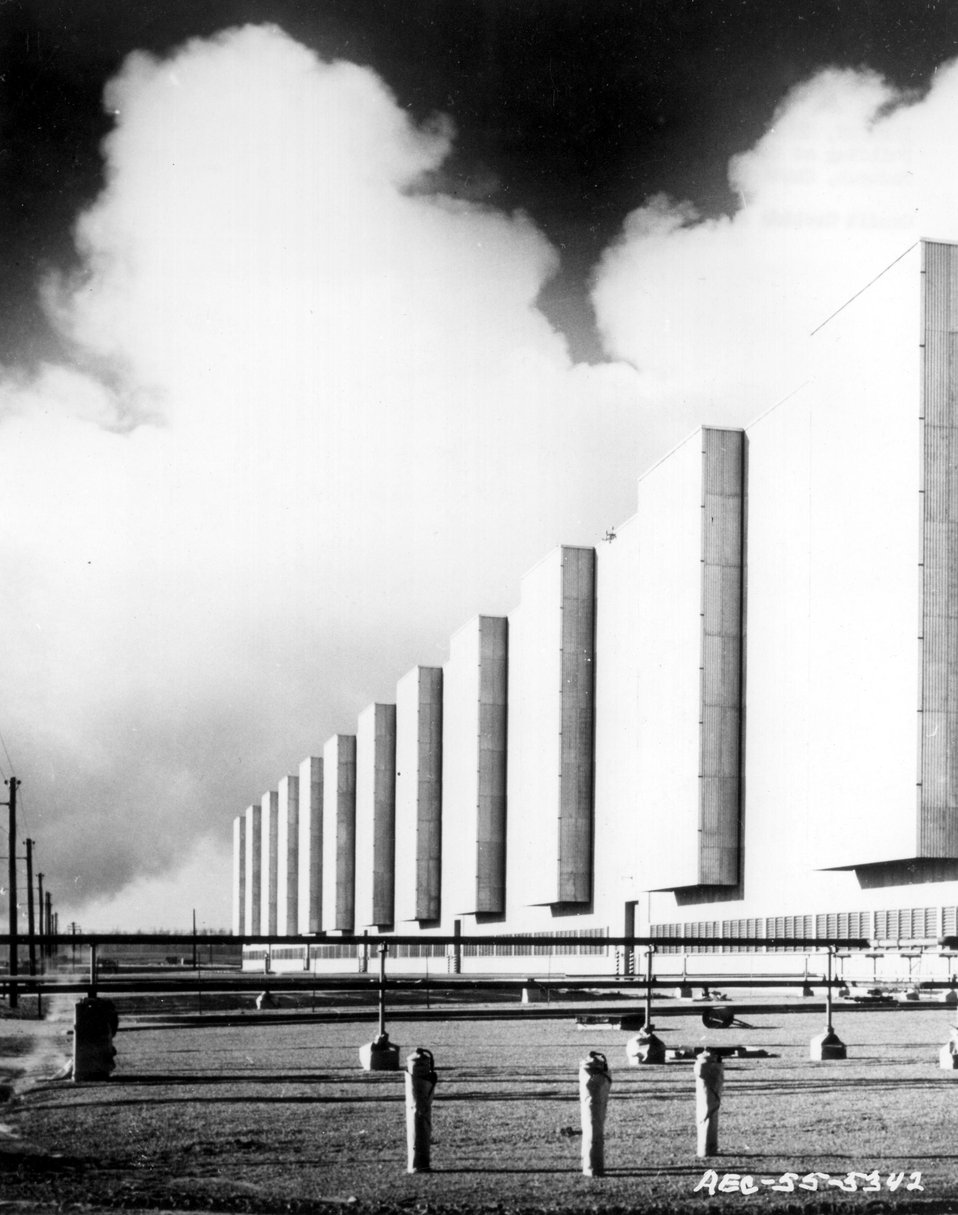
Part of a Production Building at the Gaseous diffusion plant, Paducah, Kentucky. Circa 1955.